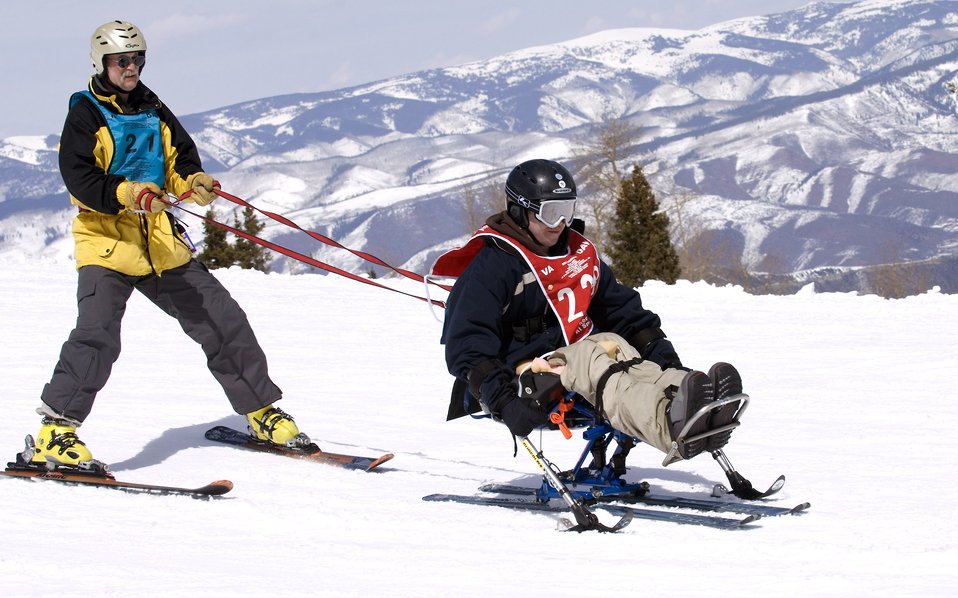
Winter sports clinic helps veterans

Senior Airman Shawn O'Neil skis down a mile high mountain on a mono-ski with the help of an instructor during the 22nd National Disabled Veterans Winter Sports Clinic held at the Snowmass Village, Colo., April 2. The annual disabled learn-to-ski clinic helps motivate and rehabilitate disabled Department of Defense veterans. It is the largest of its kind in the world. The clinic instructs veterans on Alpine and Nordic skiing, rock climbing, snowmobiling, sled hockey, and more.